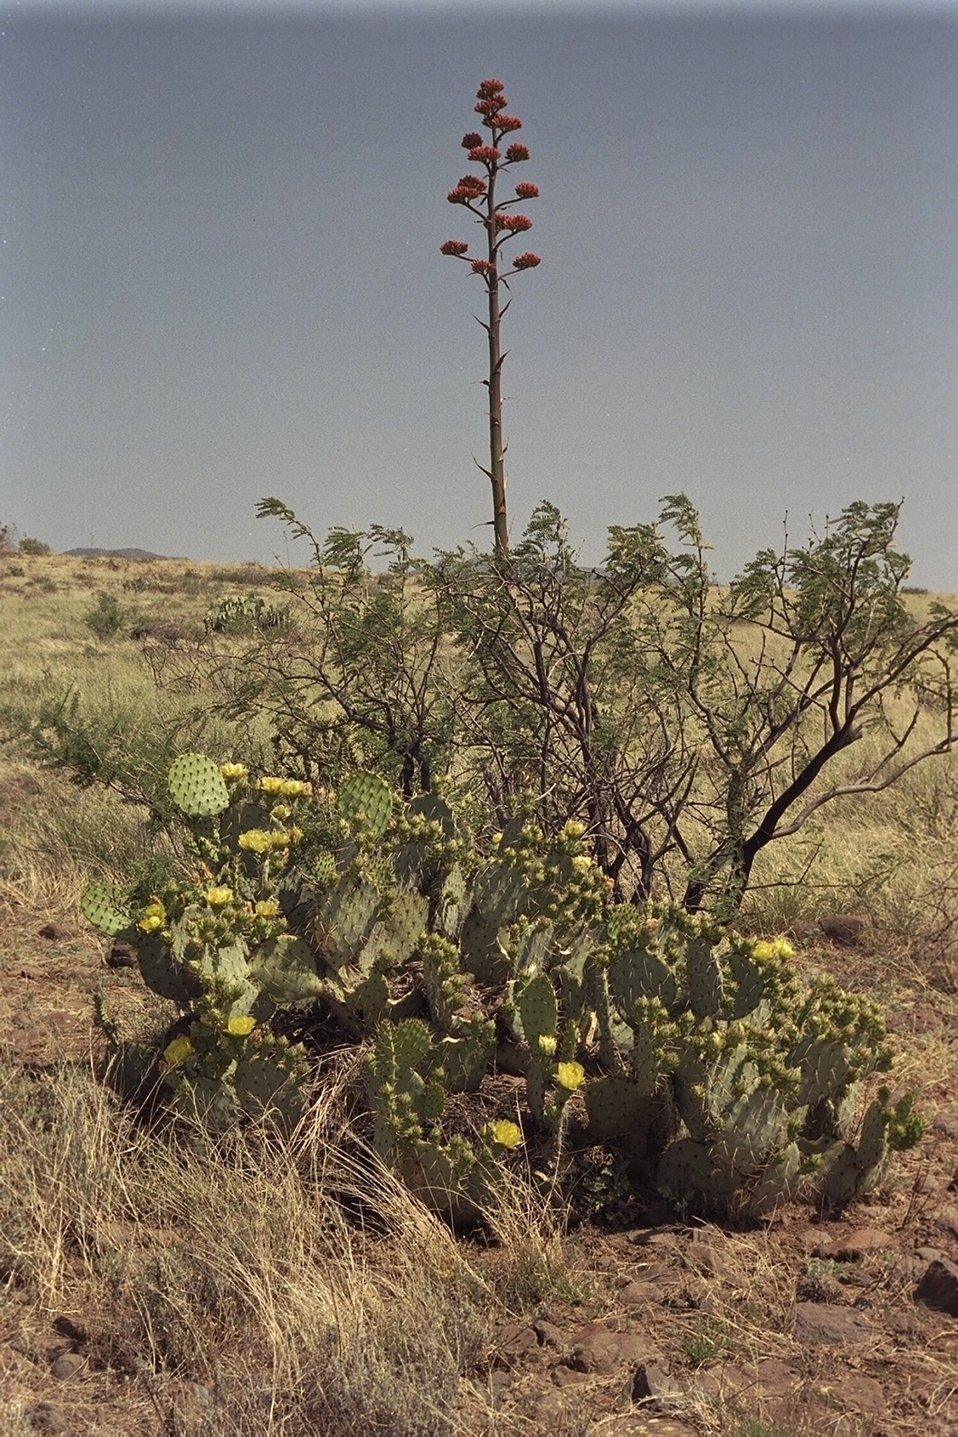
Multiple kinds of Arizona vegetation all in a row in the Agua Fria National Monument.